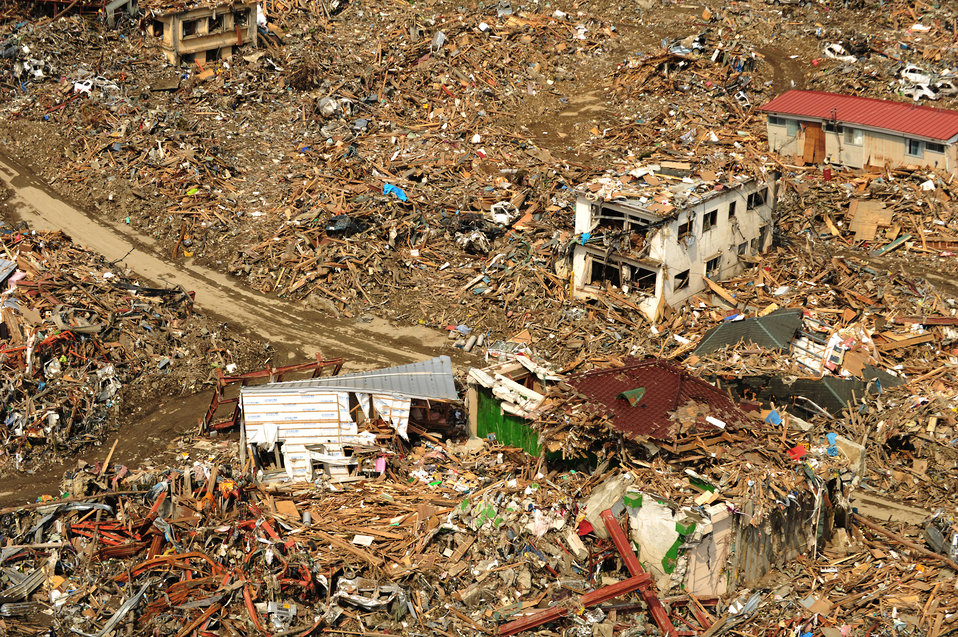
Rescue team mission

Rescue team members in an HH-60 Pave Hawk conduct search operations over Japan, March 25, 2011, in support of Operation Tomodachi.